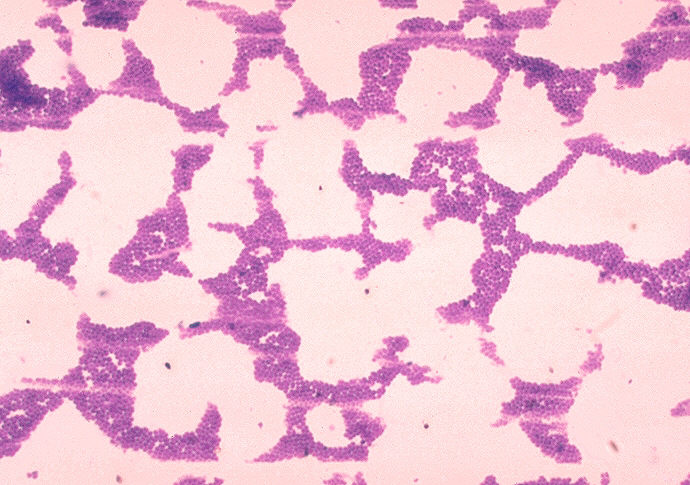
Enterococcus species.